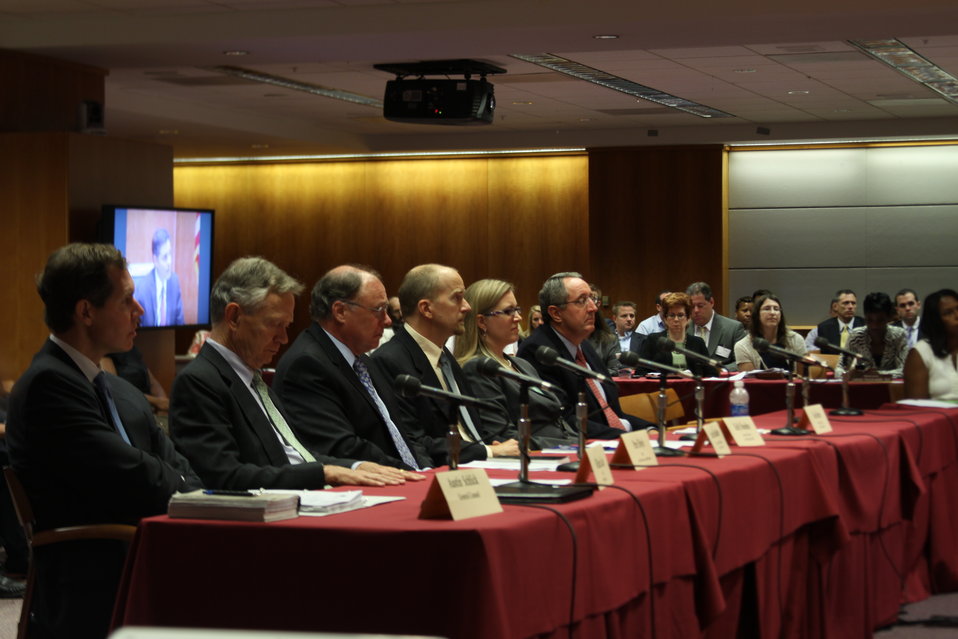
7/12/2011 Open Commission Meeting

The Media Bureau's remarks regarding Low Power Radio Service at the July 2011 Open Commission Meeting